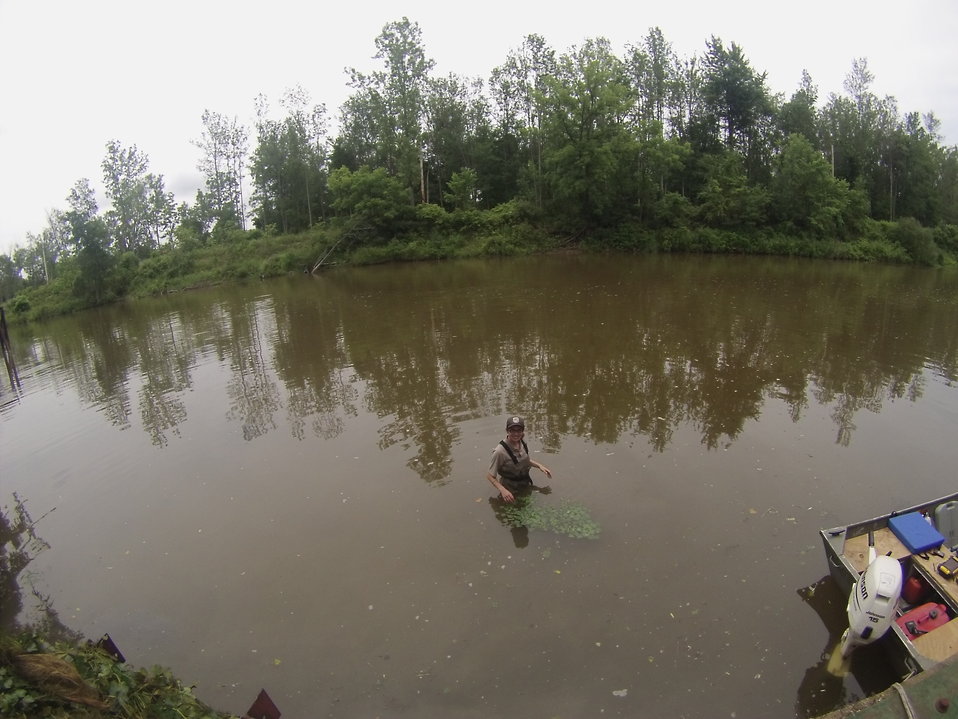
Removing it

Technician Kelly McDonald smiles in her waders as she finishes pulling up a small mat of Waterchestnut found last week.